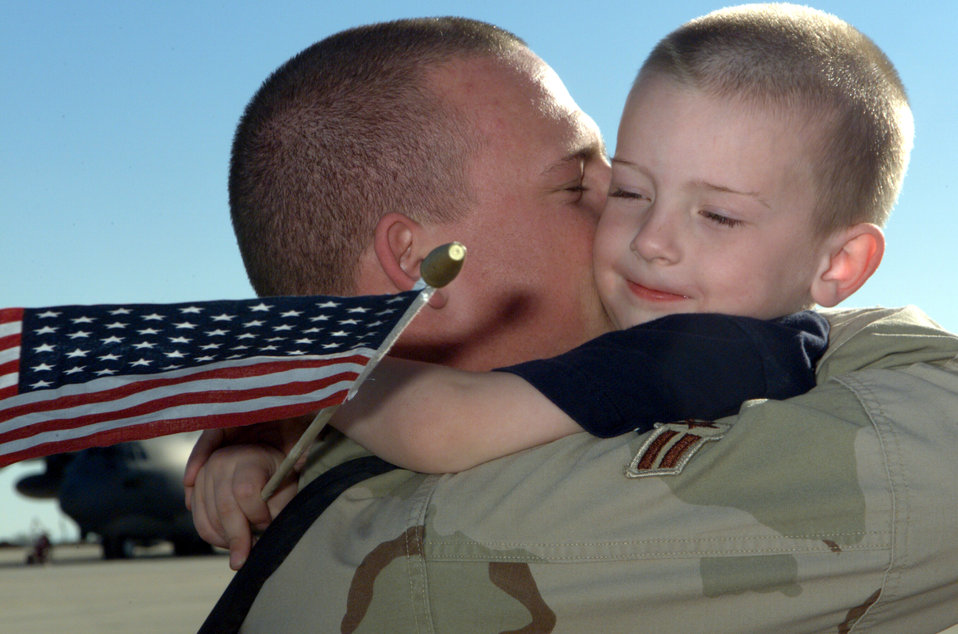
Daddy's home

DAVIS-MONTHAN AIR FORCE BASE, Ariz. -- Airman 1st Class Ryan Bryson hugs his son, Chad, for the first time in four months. Airman Bryson returned from Iraq on March 6. He is assigned to the 355th Aircraft Maintenance Squadron here.